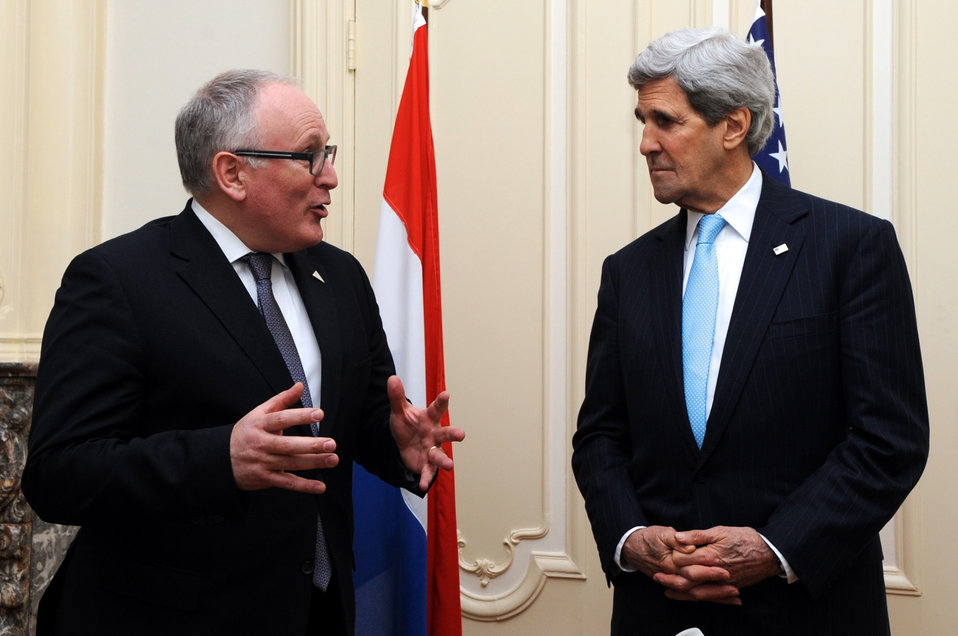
Secretary Kerry Listens as Dutch Foreign Minister Timmermans Addresses Reporters in The Hague

U.S. Secretary of State John Kerry listens as Foreign Minister Frans Timmermans of the Netherlands addresses reporters before a bilateral meeting on the margins of the National Security Summit in The Hague on March 24, 2014.